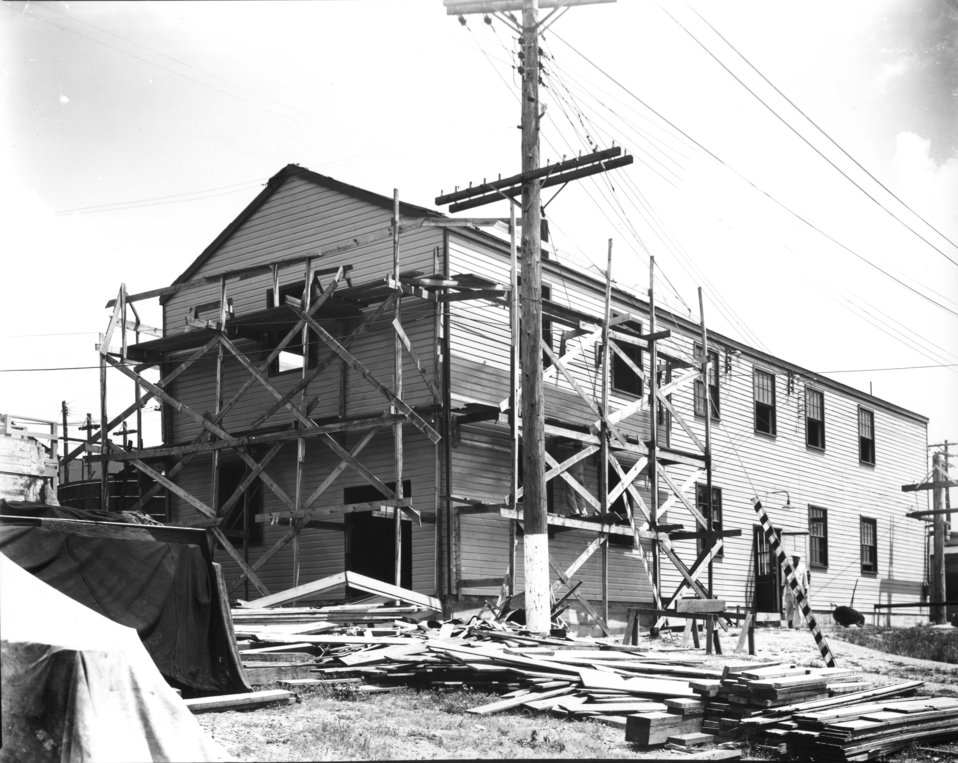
X-10 at Oak Ridge